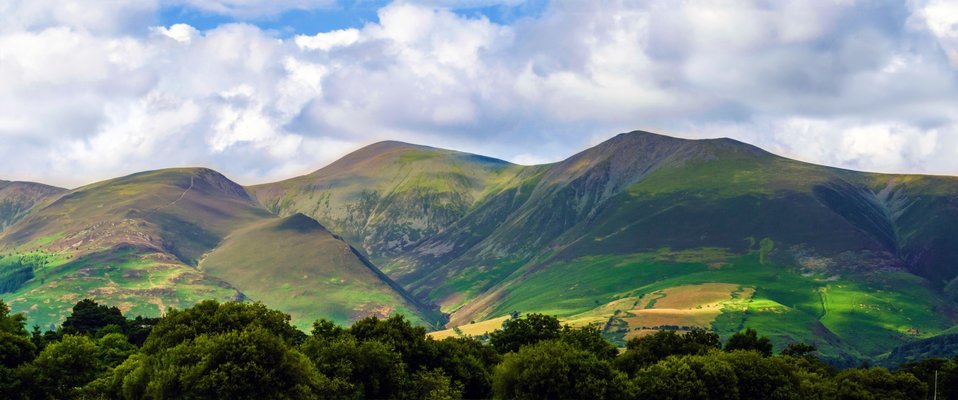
Landscape - panorama.